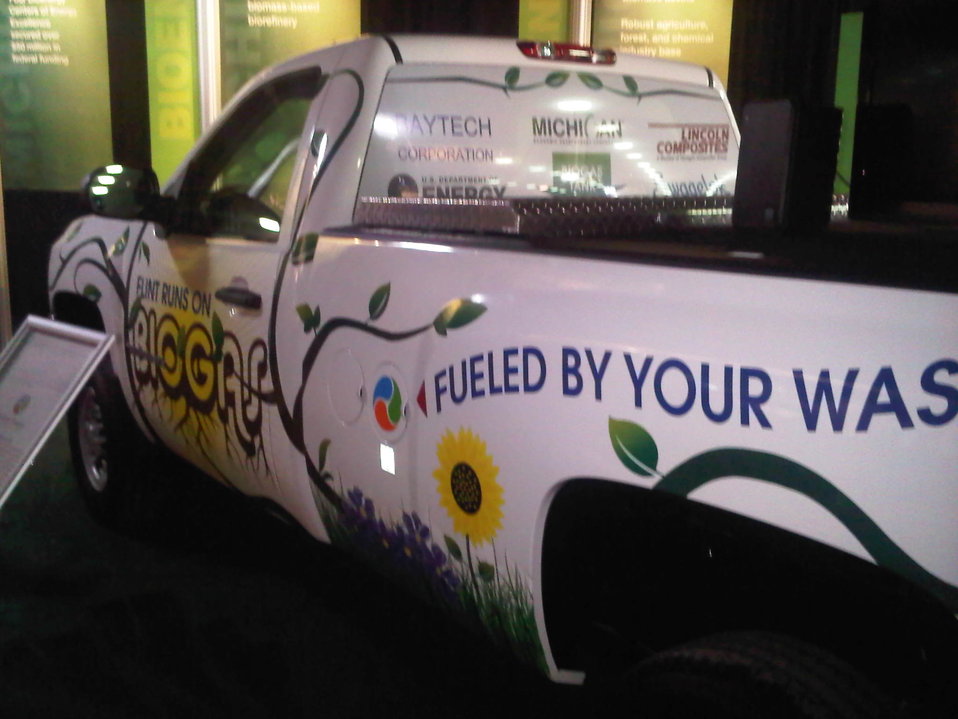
The 2011 Detroit Auto Show